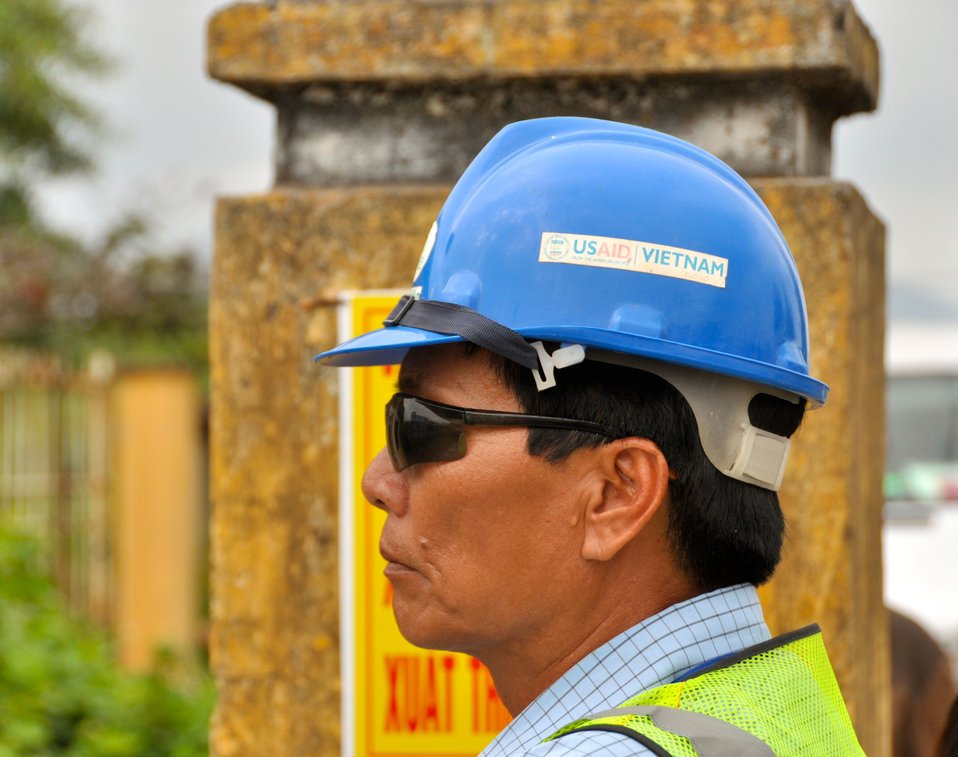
Site Preparation for Environmental Remediation of Dioxin Contamination at Danang Airport

Danang Airport, January 22, 2013